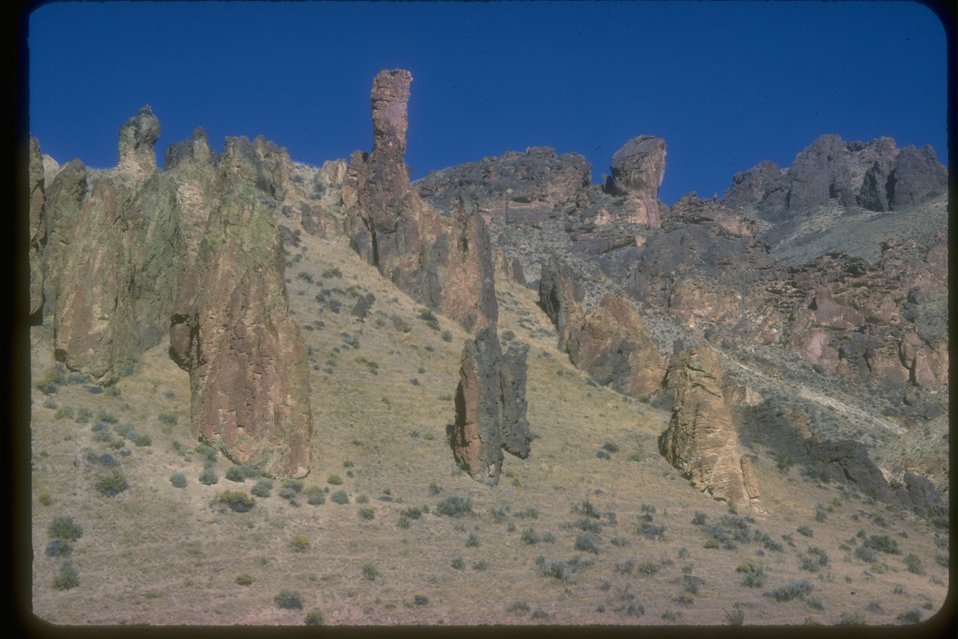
Leslie Gulch area and its large rock formations.